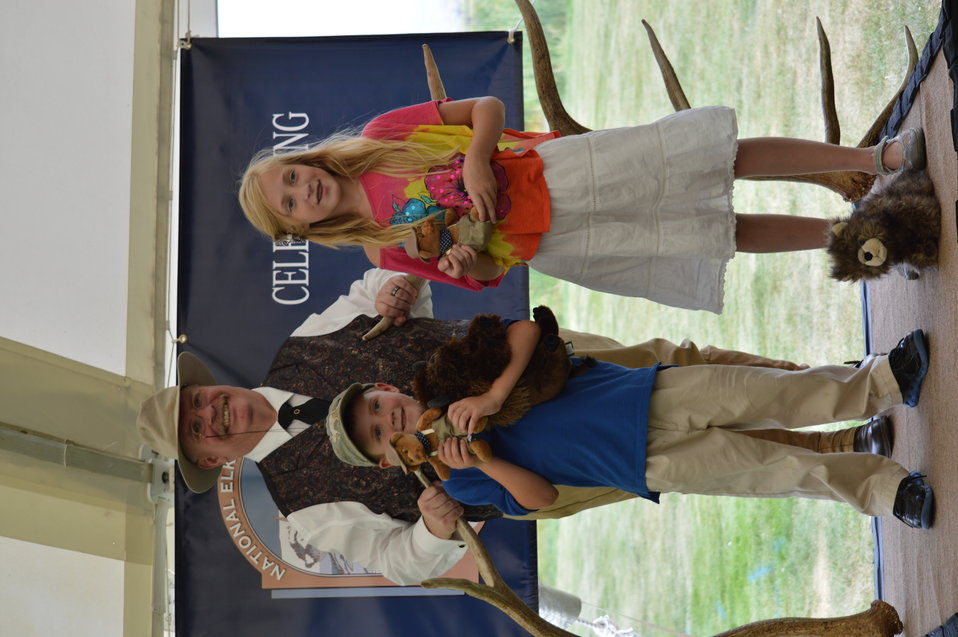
Get Your Goose On! - National Elk Refuge Style

On August 10, 2012 the U.S. Fish and Wildlife Service and Partners celebrated the 100 year anniversary of the establishment of the National Elk Refuge. In these photos, young attendees, along with Puddles the Blue Goose and the National Elk Refuge's mascot, showed us how to Get Your Goose On! with style.